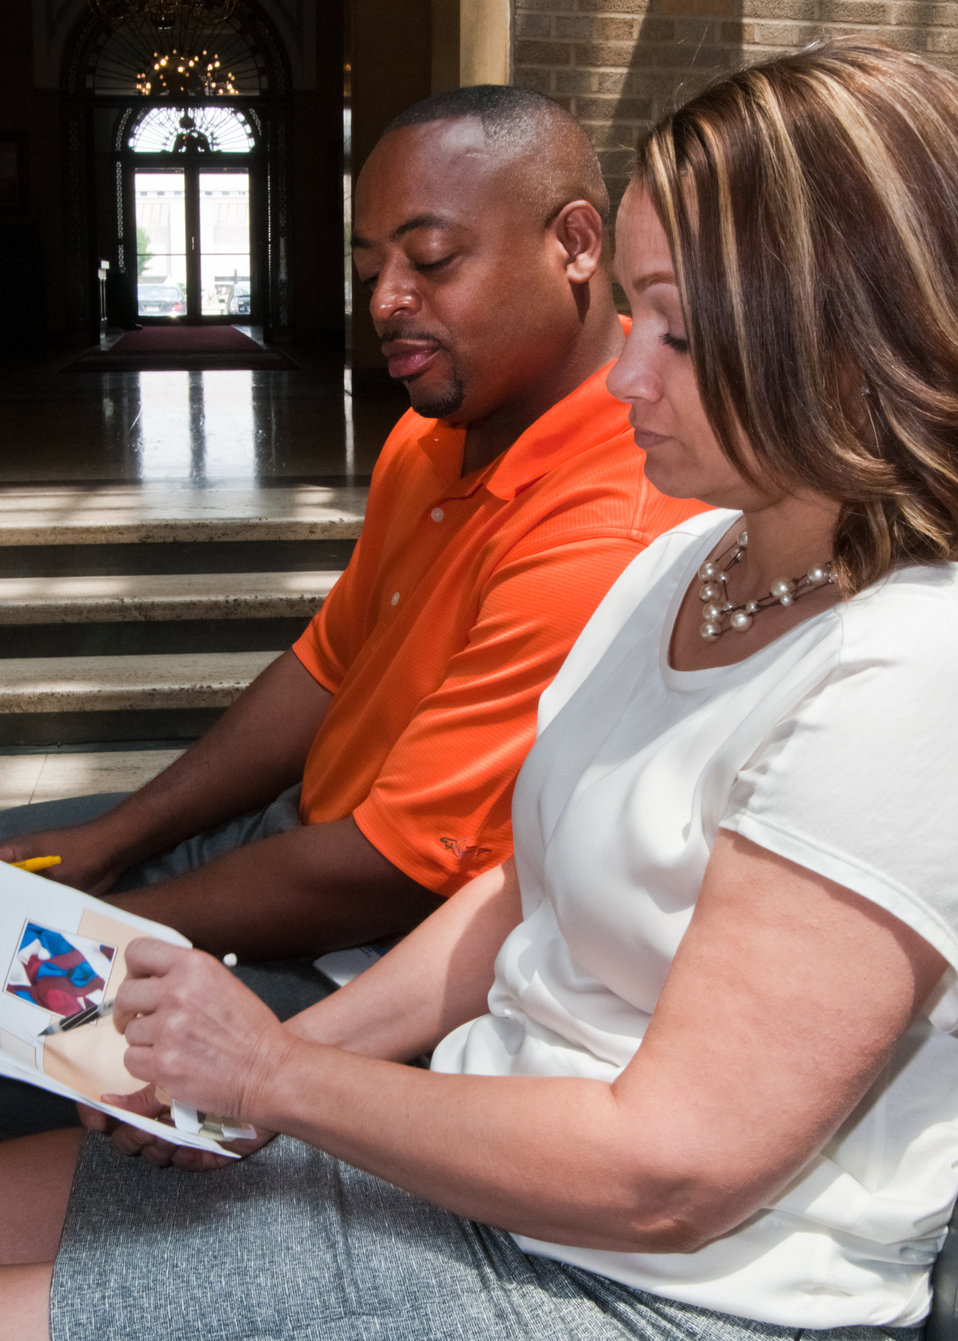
Ronald Turner (left), Foreign Agriculture Service and Dana Smith (right), Creative Media and Broadcast Center review the panelist’s subjects for the “Telework Program Party/Brown Bag” event on the patio of the Jamie Whitten Building of United States Department of Agriculture, in Washington, DC, on Tuesday, June 7, 2011. The event included an interactive telework panel and exhibits from the field of telework, telecommuting and mobile work environments. The event was open to all USDA employees, supervisors, managers, human resources staff and USDA telework program coordinators.